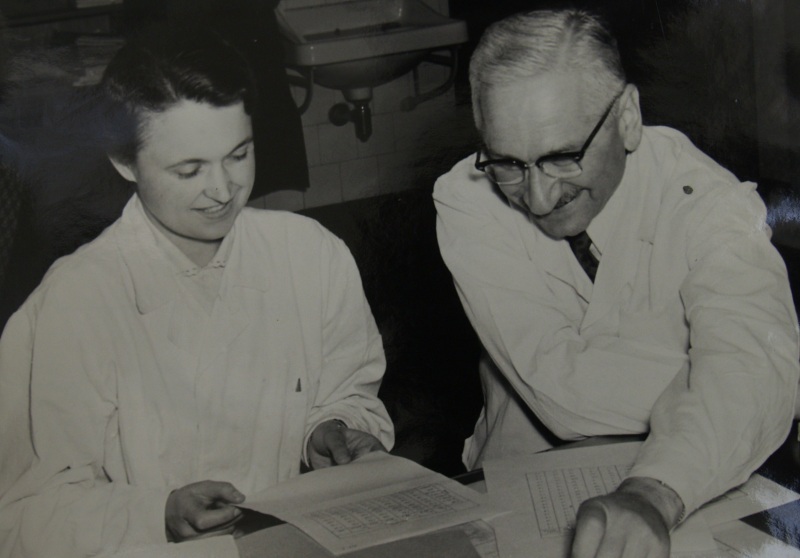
Čeština: Acta Virologica